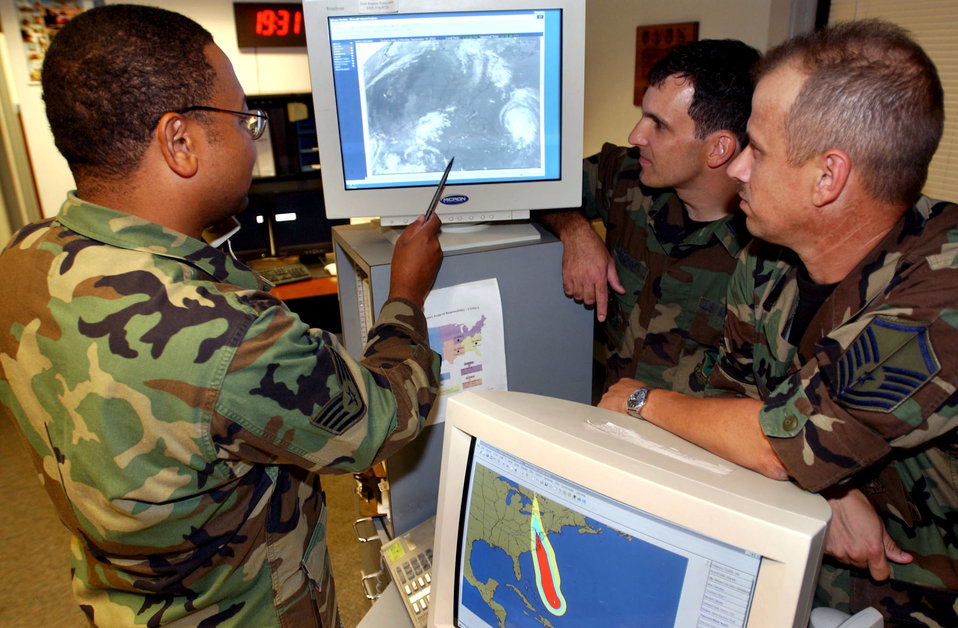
Isabel's path

DOVER AIR FORCE BASE, Del. -- Staff Sgt. Jason Bowry points out the projected pathway of Hurricane Isabel to Capt. Paul Gifford and Master Sgt. Arlen Lewis. All three work in the 436th Operations Support Squadron's weather flight here.